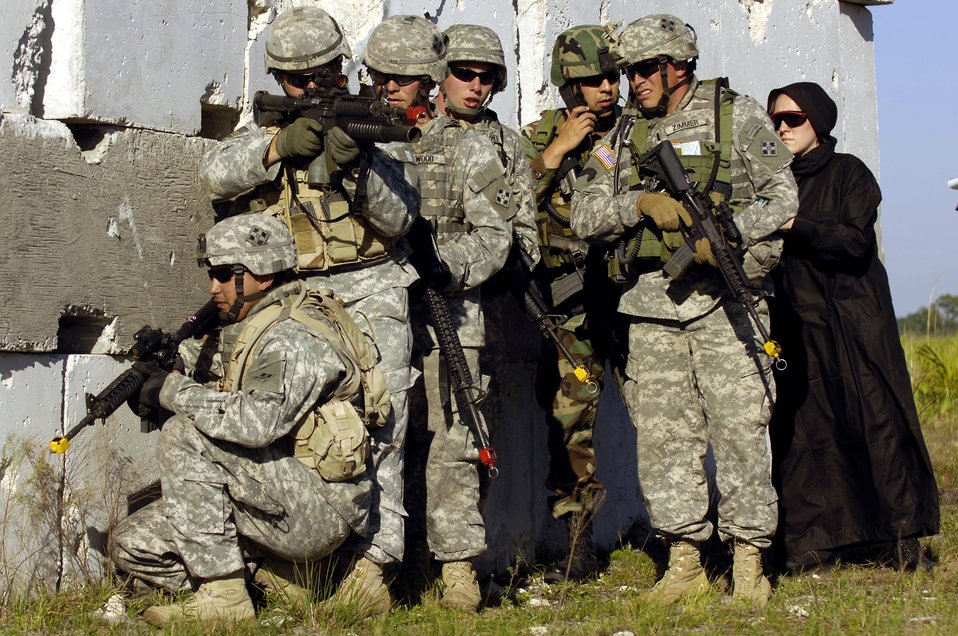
Atlantic Strike V begins in Avon Park

An Air Force joint terminal attack controller integrates with 4th Infantry Division Soldiers from Fort Hood, Texas, to receive an intelligence briefing before participating in Atlantic Strike V April 16 at Avon Park, Fla. Atlantic Strike is a joint forces training event involving JTACs from the Army, Air Force and Marines and is held semi-annually at the Avon Park Air Ground Training Complex.